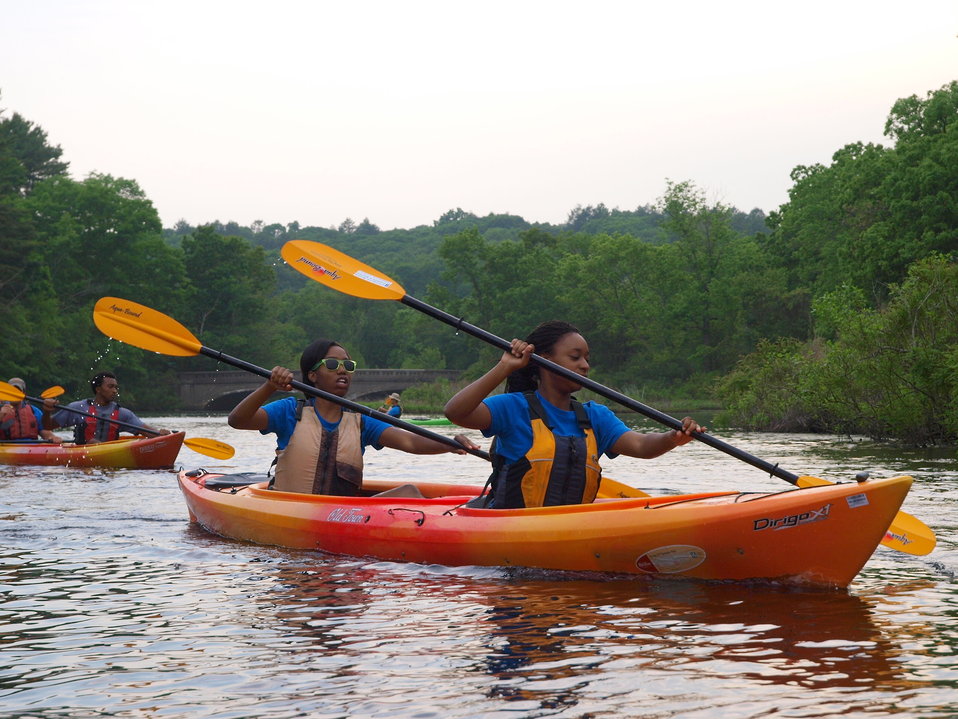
Kayaking!

Kayaking on the Charles River in Eastern Massachusetts.